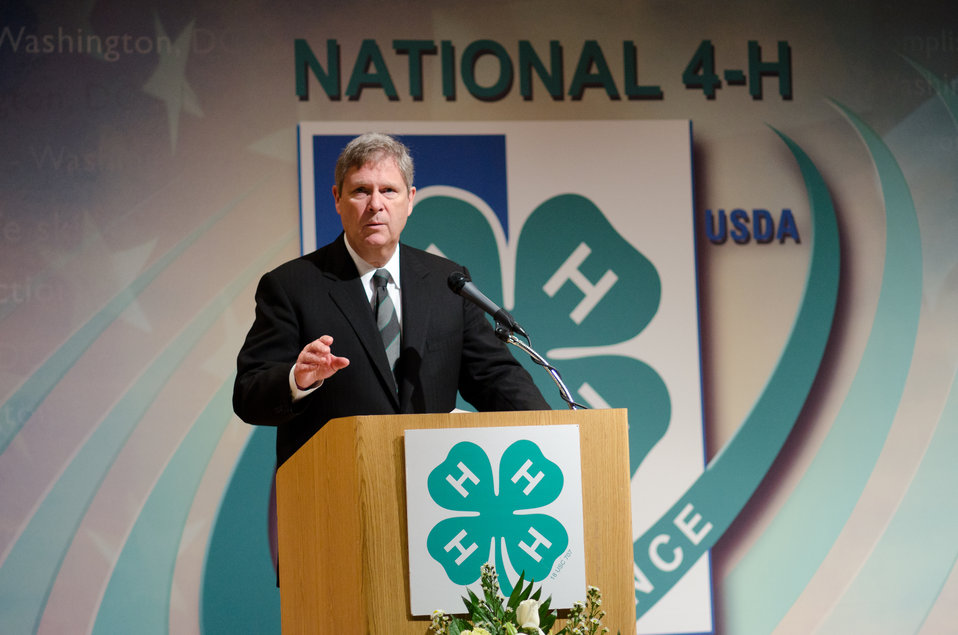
U.S. Department of Agriculture (USDA) Secretary Tom Vilsack spoke with approximately 300 youth from 47 states or territories and Canada at the National 4-H Conference on Tuesday, April 5, 2011 in Washington, DC. The conference is the premier youth development opportunity of the USDA. Aged between 15-19 years old the attendees were selected by various means by their states to be delegates to the conference. The Secretaries then took questions from the audience. Secretary Vilsack received questions on topics such as land grants, what is an average day for him, and both talked of their goals to have 1,000 new farmers and 1,000 new educators.